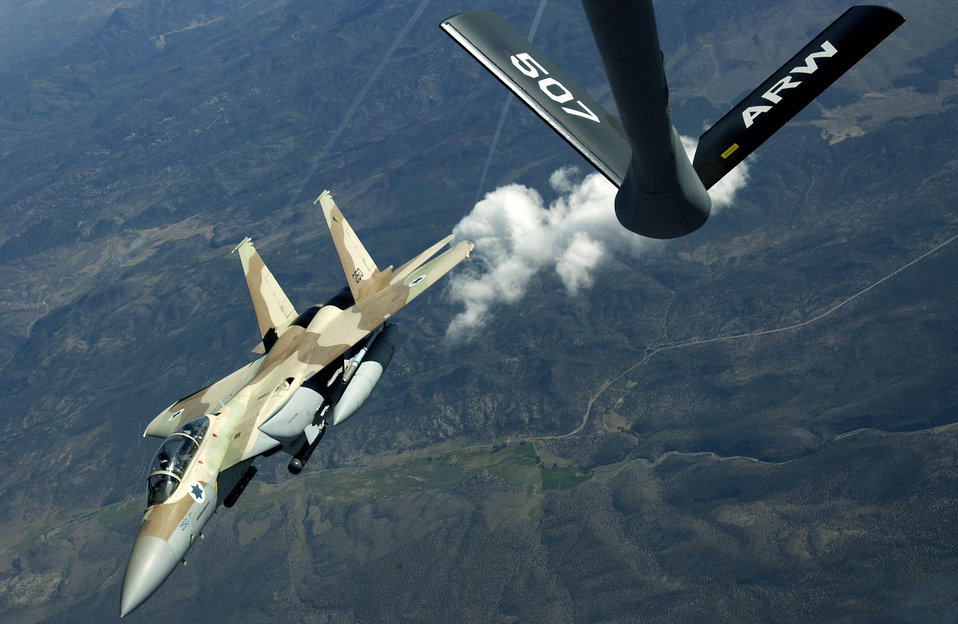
Fueling all fighters

OVER NEVADA -- An Israeli F-15 maneuvers away after receiving fuel from a KC-135 Stratotanker over Nevada's test and training ranges during Red Flag 04-3 here Aug 25. More than 100 aircraft and 2,500 participants are involved in this exercise. Red Flag is a realistic combat training exercise involving the U.S. Air Force and its allies.